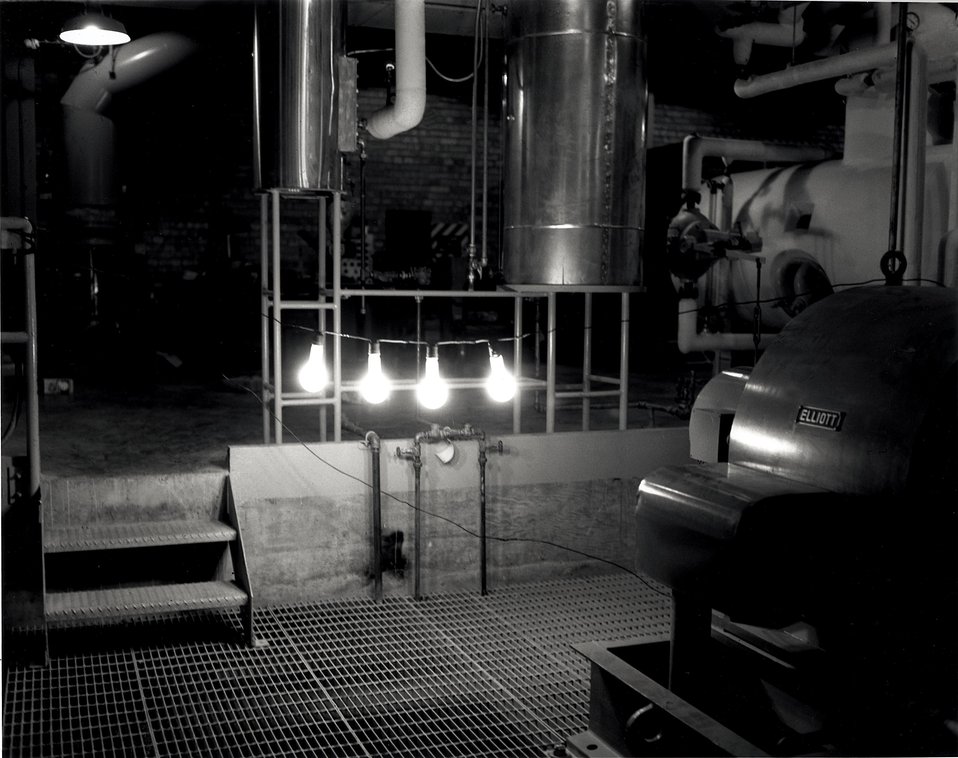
December 20, 1951, Argonne's EBR was used to generate electrical power. This was the first known production of electricity using the heat from nuclear fissionelectrical power
c.1951